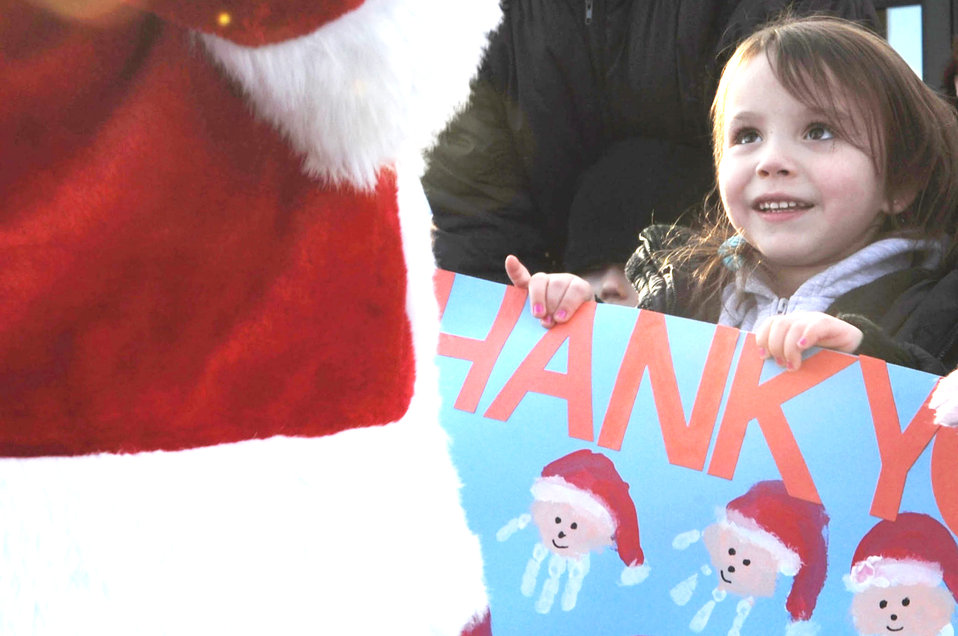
Ellsworth members support Angel Tree program

A child enrolled in the Youth and Family Services child care center smiles in excitement while seeing Santa Dec. 17, 2009, in Rapid City, S.D. This is the third time Santa, Mrs. Claus and Airmen from Ellsworth Air Force Base, S.D., bought, wrapped and delivered gifts for every child at the center.